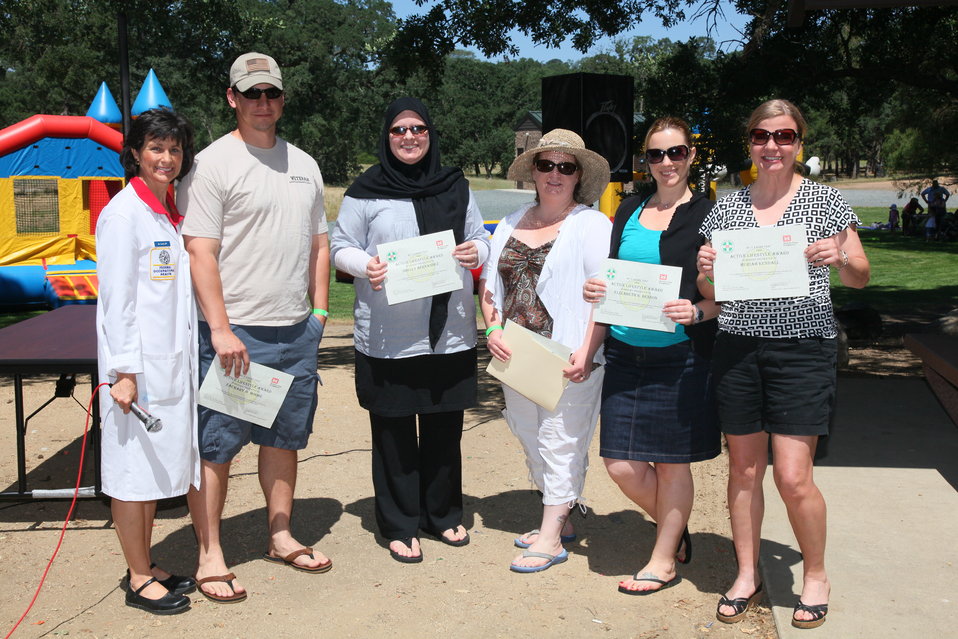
2011 Annual Picnic